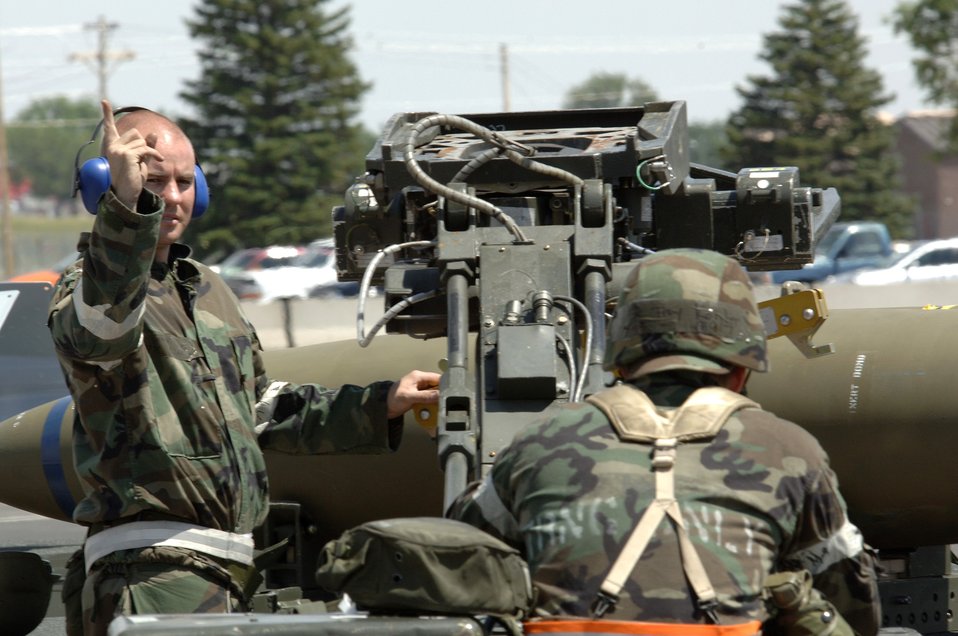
Badlands Express

Senior Airman Ryan McGlocklin (left) and Airman 1st Class Eric Mansfield prepare to load a training bomb into the bay of a B-1 Lancer at Ellsworth Air Force Base, S.D., on Monday, June 26. The base is conducting Exercise Badlands Express 06-04 to prepare for an operational readiness inspection in July. The Airmen are assigned to the 28th Aircraft Maintenance Squadron.